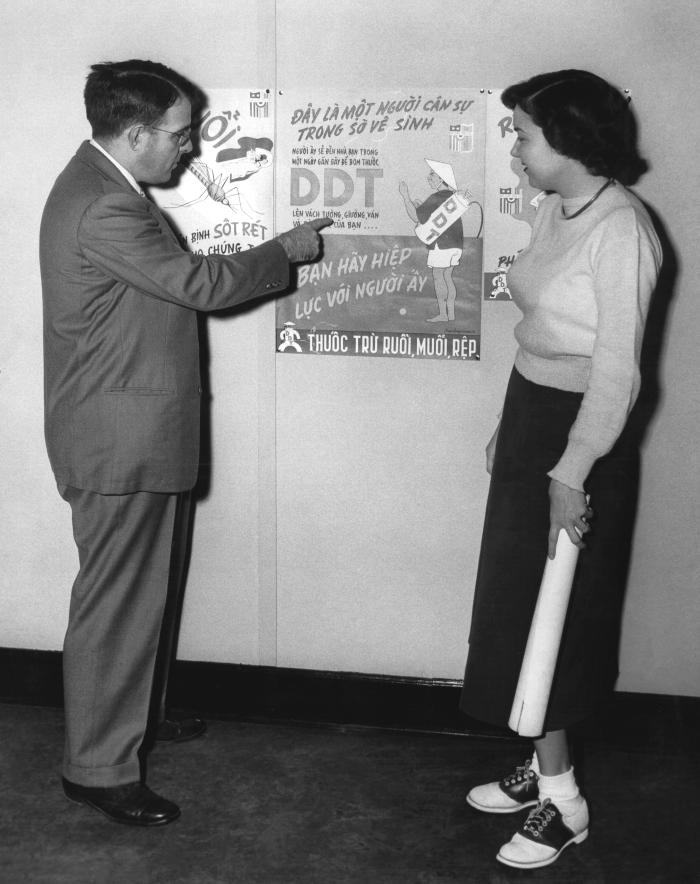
This photograph shows CDC medical entomologist Dr. Harry D. Pratt describing a DDT poster used in a Malaria Control Program.